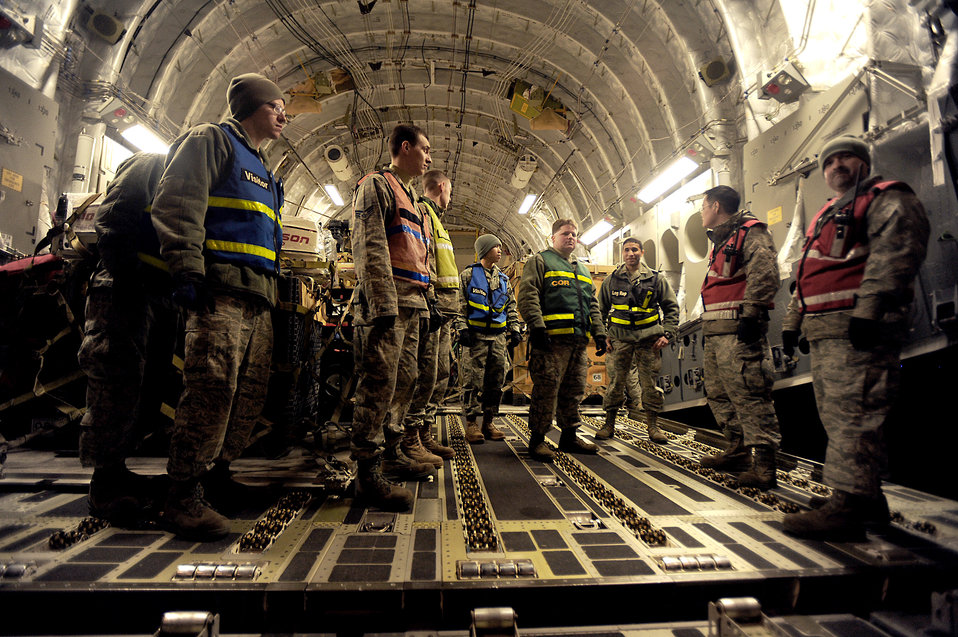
OPERATION TOMODACHI

U.S. Air Force Aerial Porters from Misawa Air Base, Japan prepare to off load earthquake relief supplies from a C-17 III Globemaster on March 13, 2011 during Operation Tomodachi.